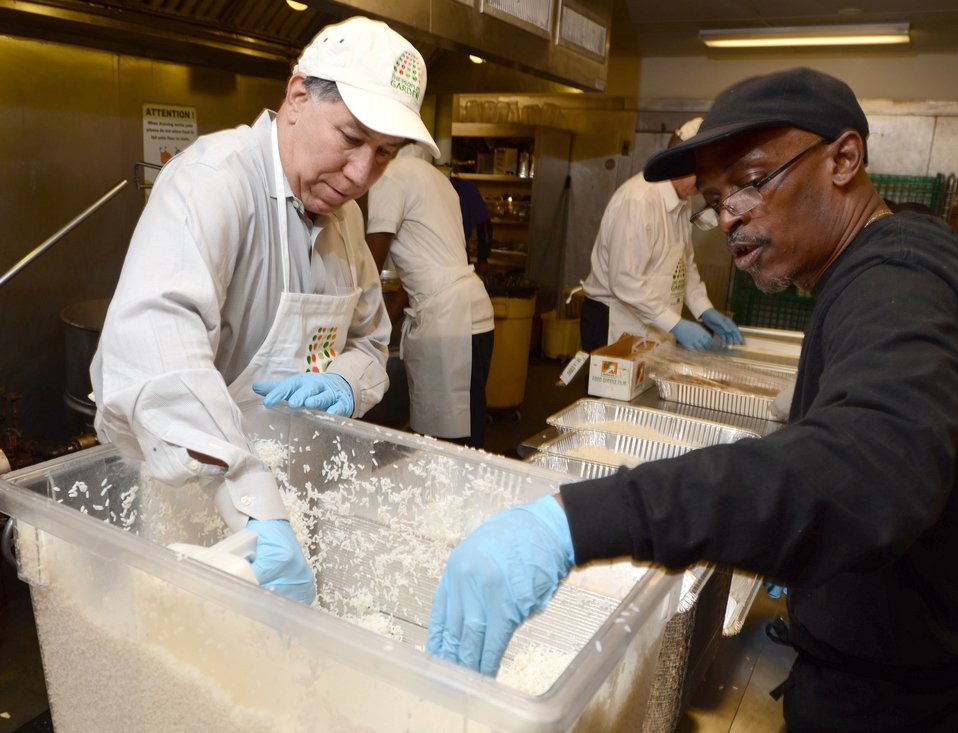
From left: Ed Avalos, Under Secretary for Marketing and Regulatory Programs and Gregory Jones, D.C. Central Kitchen employee help prepare the evening meal at the D.C. Central Kitchen during USDA’s National Service Day on January 12, 2012. NSD honors Dr. Martin Luther Kings’s contributions to the Civil Rights Movement. The D.C. Central Kitchen turns leftover food into millions of meals for thousands of at-risk individuals while offering nationally recognized culinary job training to once homeless and hungry adults.